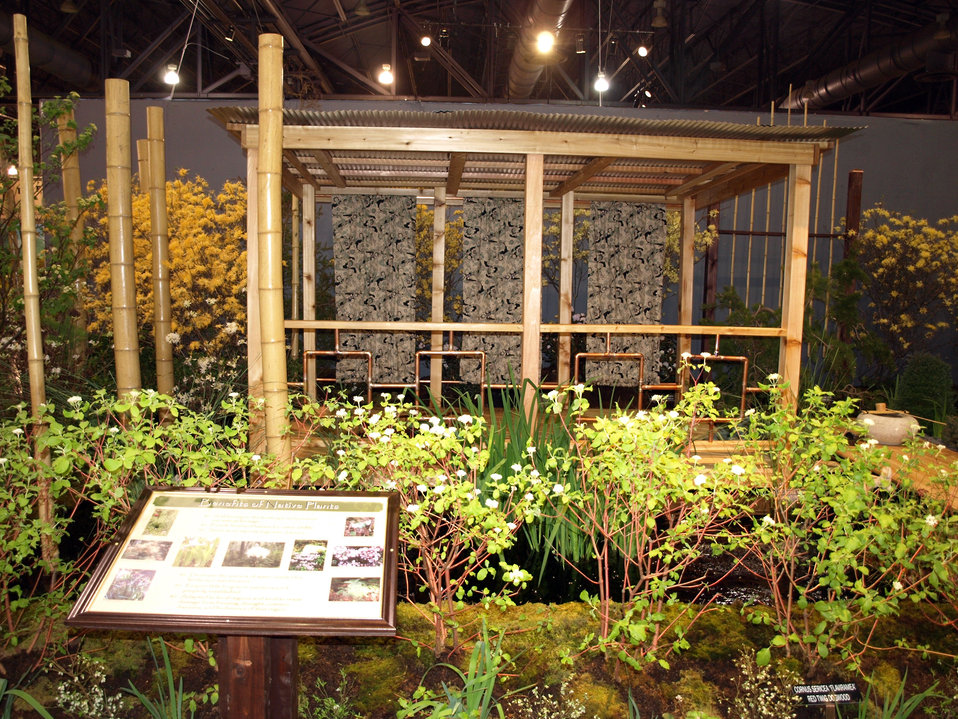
EPA’s 2010 Philadelphia Flower Show Exhibit from the front

The 2010 exhibit viewed from the front

Learn more about EPA’s Exhibit at the 2010 Philadelphia International Flower Show:
www.epa.gov/reg3esd1/garden/flower show.htm
www.epa.gov/reg3esd1/garden/flower show plants.htm
www.epa.gov/reg3esd1/garden/pdf/flowershow2010.pdf (6 pp, 864K)